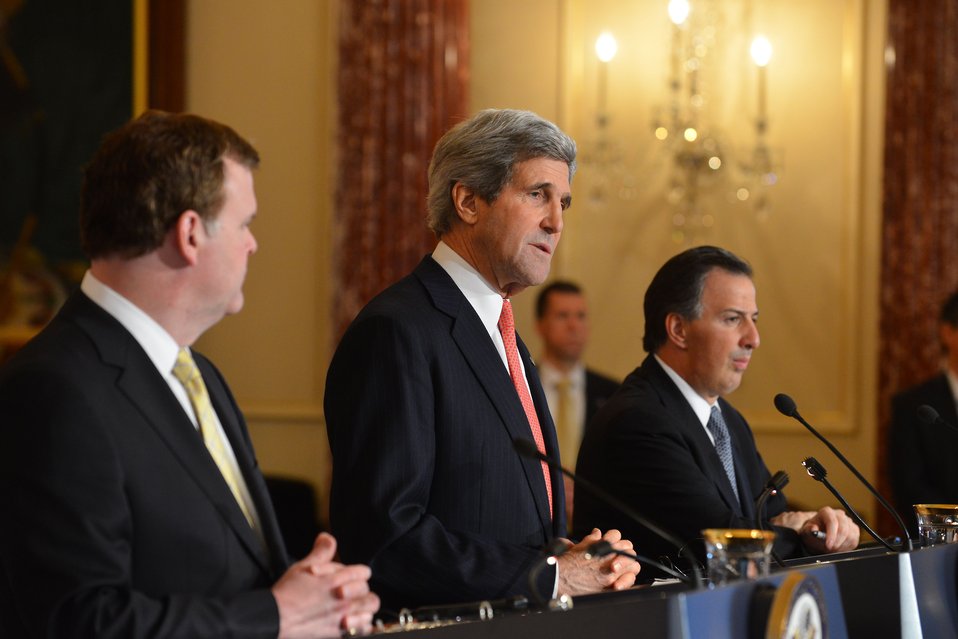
Secretary Kerry, Canadian Foreign Minister Baird, and Mexican Foreign Secretary Meade Address Reporters at the North American Trilateral Ministerial

U.S. Secretary of State John Kerry, Canadian Foreign Minister John Baird, and Mexican Foreign Secretary Jose Antonio Meade address reporters during the North American Trilateral Ministerial at the U.S. Department of State in Washington, D.C., on January 17, 2014.